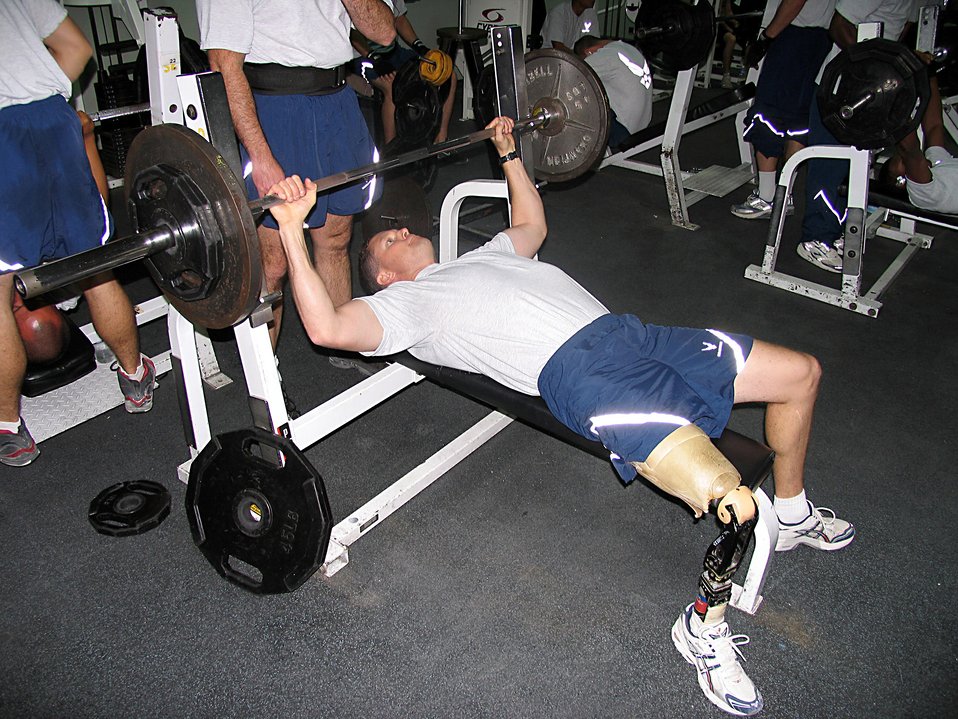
Overcoming adversity

SOUTHWEST ASIA (AFPN) -- Maj. Alan Brown does some bench presses at the gym. He is scheduled to attend pilot re-qualification training. He lost his leg more than seven years ago during a hunting accident.